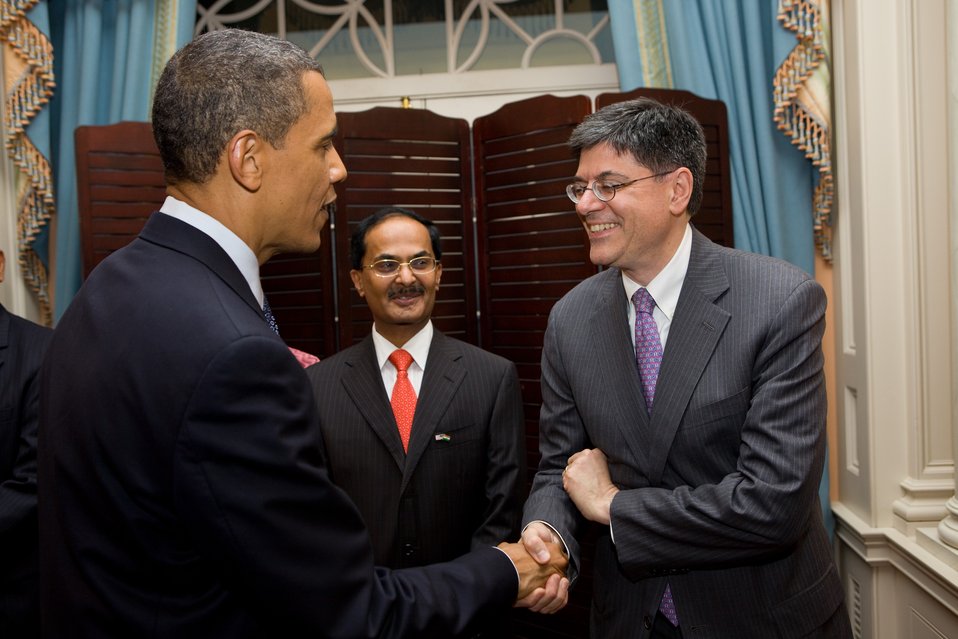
President Obama Shakes Hands With Deputy Secretary of State Lew

U.S. President Barack Obama shakes hands with U.S. Deputy Secretary of State Jacob J. Lew at the U.S.-India Strategic Dialogue reception at the the U.S. Department of State in Washington, D.C., on June 3, 2010.